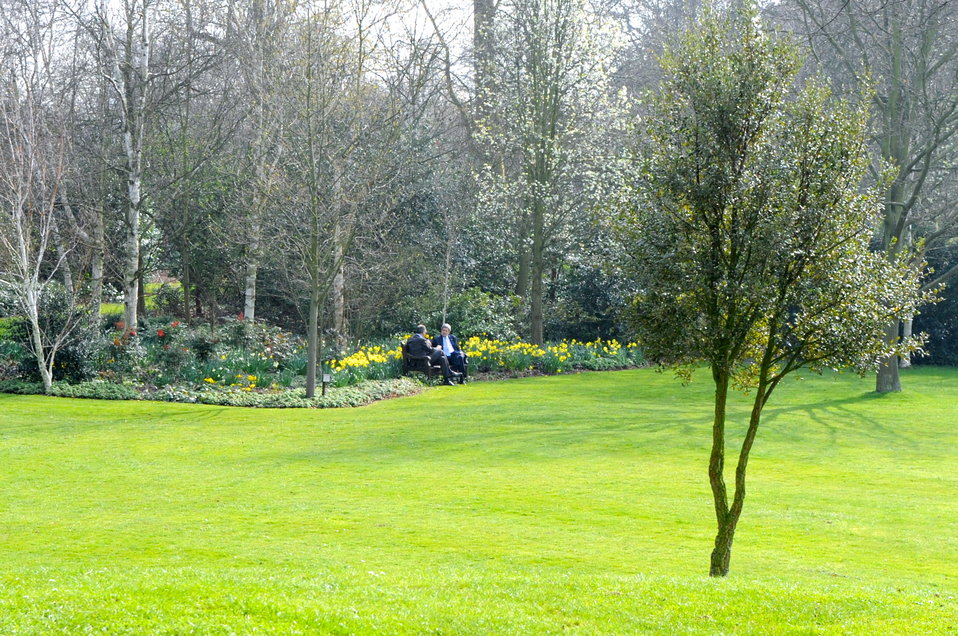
Secretary Kerry, Russian Foreign Minister Lavrov Hold One-on-One Discussion in London About Ukraine

U.S. Secretary of State John Kerry and Russian Foreign Minister Sergey Lavrov sit on the edge of the lawn at Winfield House, the U.S. Ambassador's Residence in London, United Kingdom, on March 14, 2014, as they hold a one-on-one discussion about de-escalating tensions in Ukraine.